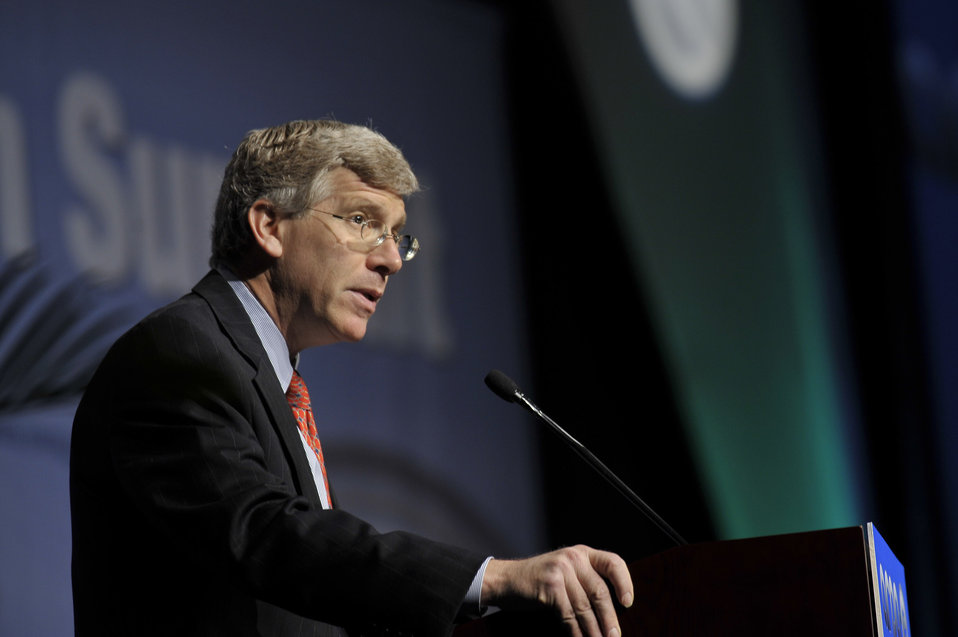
ARPA-E Energy Innovation Summit 2011, 78 of 83

Daniel Poneman, Deputy Secretary, US Department of Energy.